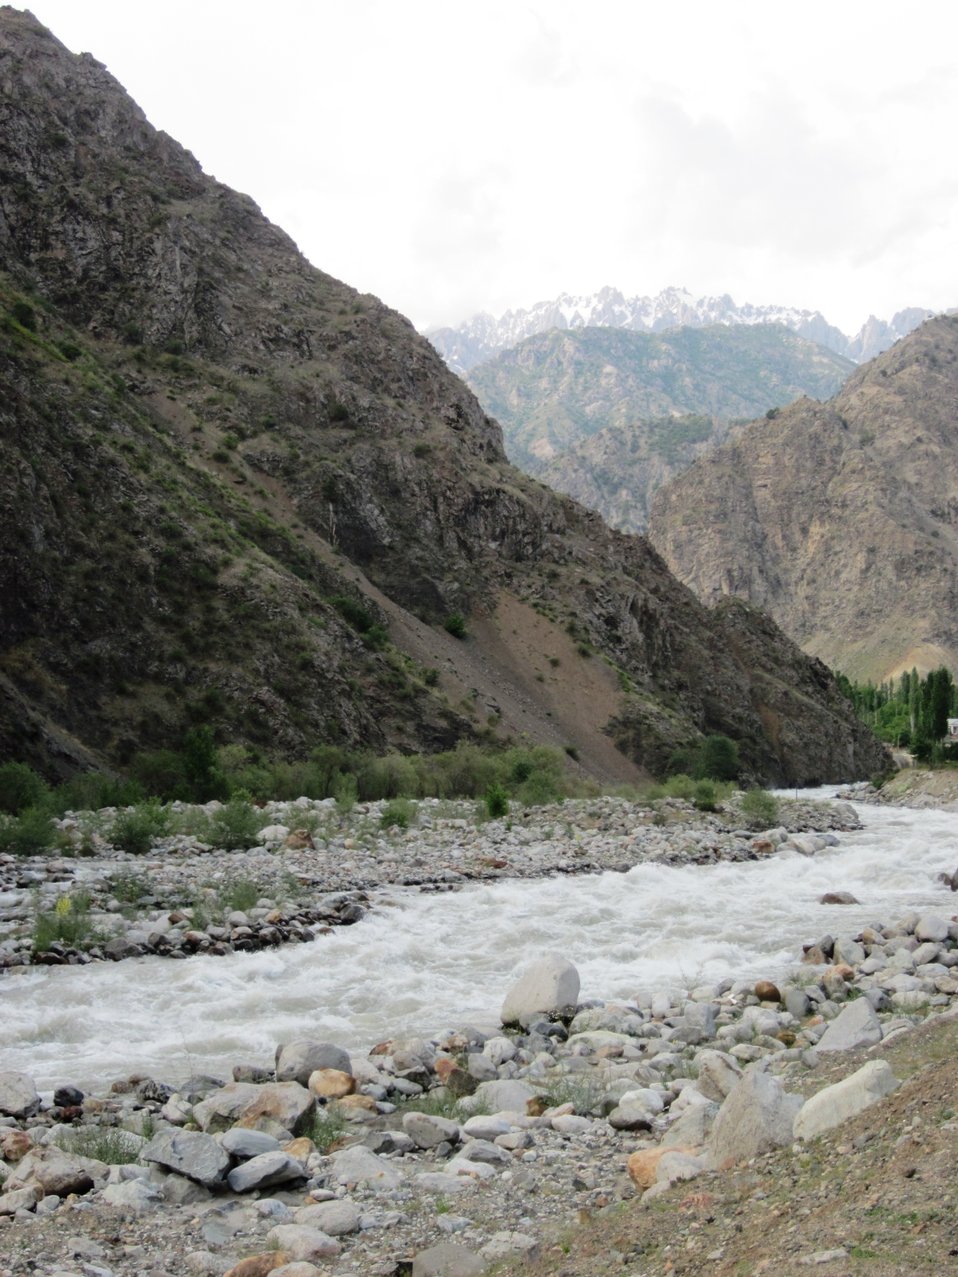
A Photo is Taken of the Scenery in Dushanbe

A photo of the scenery is taken in Dushanbe, Tajikistan, on June 10, 2010.